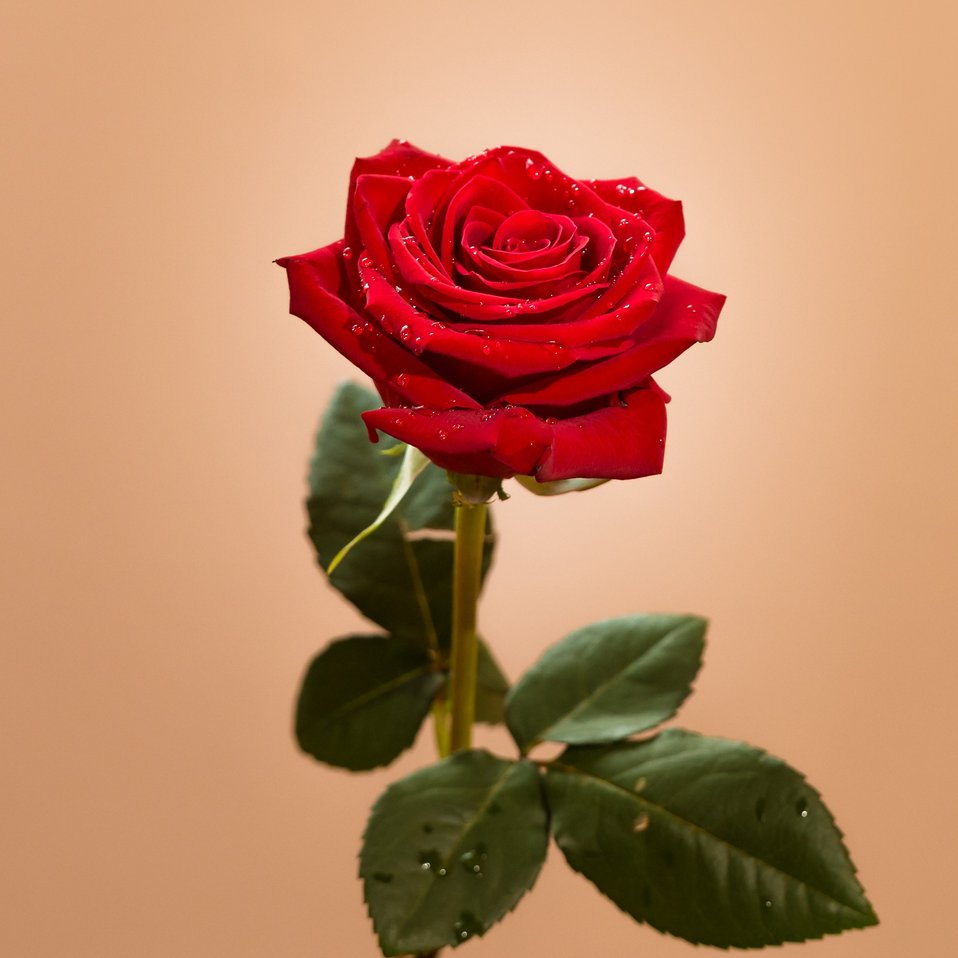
Red rose.